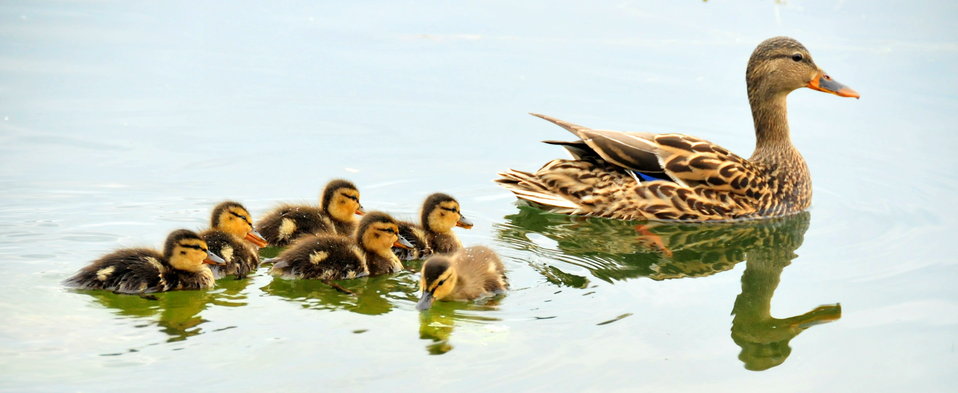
Mallard Hen and Her Brood 6